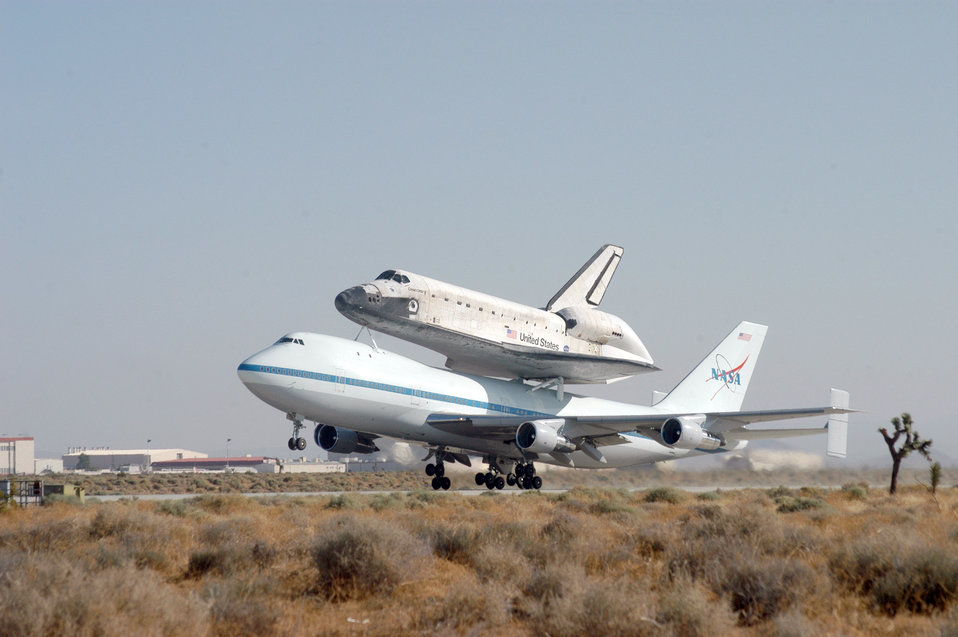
Shuttle lands, departs under Edwards watchful eye

EDWARDS AIR FORCE BASE, Calif. -- Space Shuttle Discovery leaves Edwards on the back of a modified Boeing 747. The Aug. 19 takeoff marked the first leg of the orbiter's cross-country trek to its home at Kennedy Space Center in Florida.